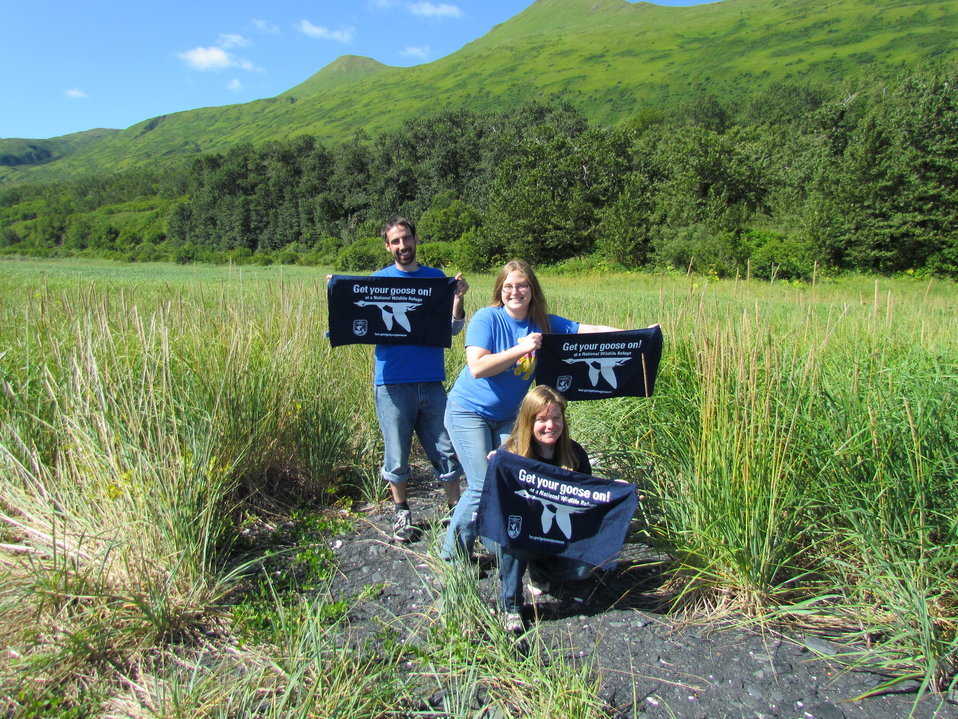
Get Your Goose On! - Alaska Style

Student Conservation Association interns, Rory Psotka, Ali Sutton and Kristen Riesberg

Credit: Shelly Lawson / USFWS

The Kodiak National Wildlife Refuge is a United States National Wildlife Refuge in the Kodiak Archipelago in southwestern Alaska, United States.

The Kodiak National Wildlife Refuge includes the southwestern two-thirds of Kodiak Island, Uganik Island, the Red Peaks area of Afognak Island and all of Ban Island in the archipelago. It encompasses 1,990,418 acres (8,054.94 km2).[2] The refuge is administered from offices in Kodiak.

The refuge contains seven major rivers and about 100 streams. It is a spawning ground for all six species of Pacific Ocean salmon, trout and several other fish species, as well as a nesting ground for 250 species of bird, many of which feed on salmon. The refuge has only six native species of mammals: Kodiak brown bear, red fox, river otter, ermine, little brown bat and tundra vole. The non-native mammals Sitka deer, mountain goat, Roosevelt elk, snowshoe hare and beaver were introduced to the archipelago between the 1920s and 1950s and are now hunted and trapped.

The climate of the refuge is that of southern Alaska, mild and rainy. Many areas in the refuge are densely forested with Sitka Spruce at lower elevations. There are grasslands in drier areas and at higher elevations. The refuge contains several small glaciers.